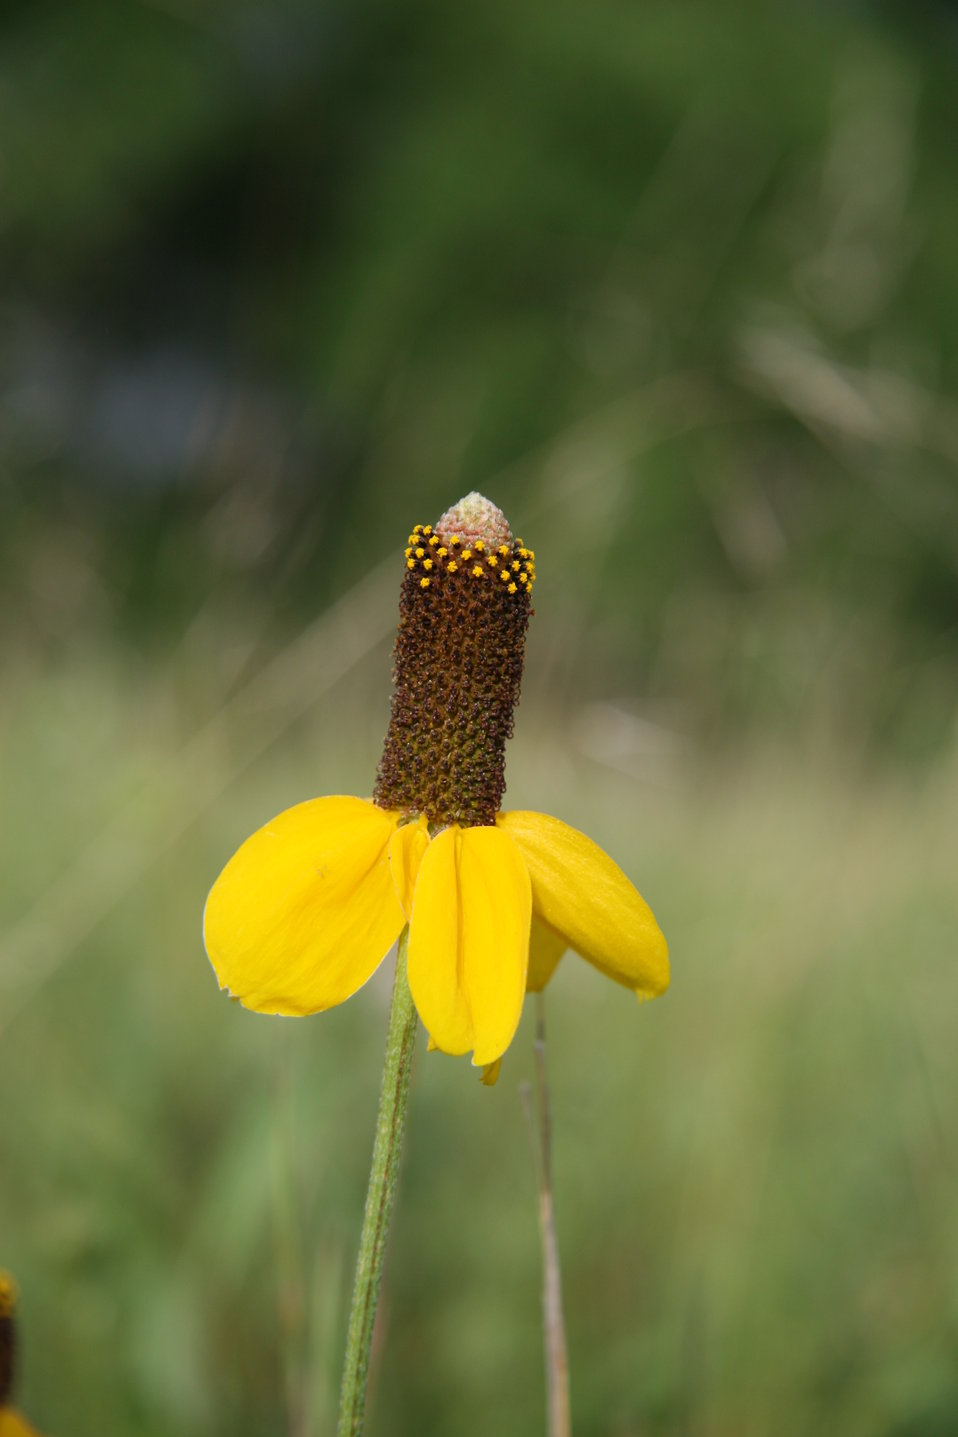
Yellow Coneflower seen on a Wildflower Walk held on Munch's Coulee National Recreation Hiking Trail at Des Lacs National Wildlife Refuge in North Dakota.